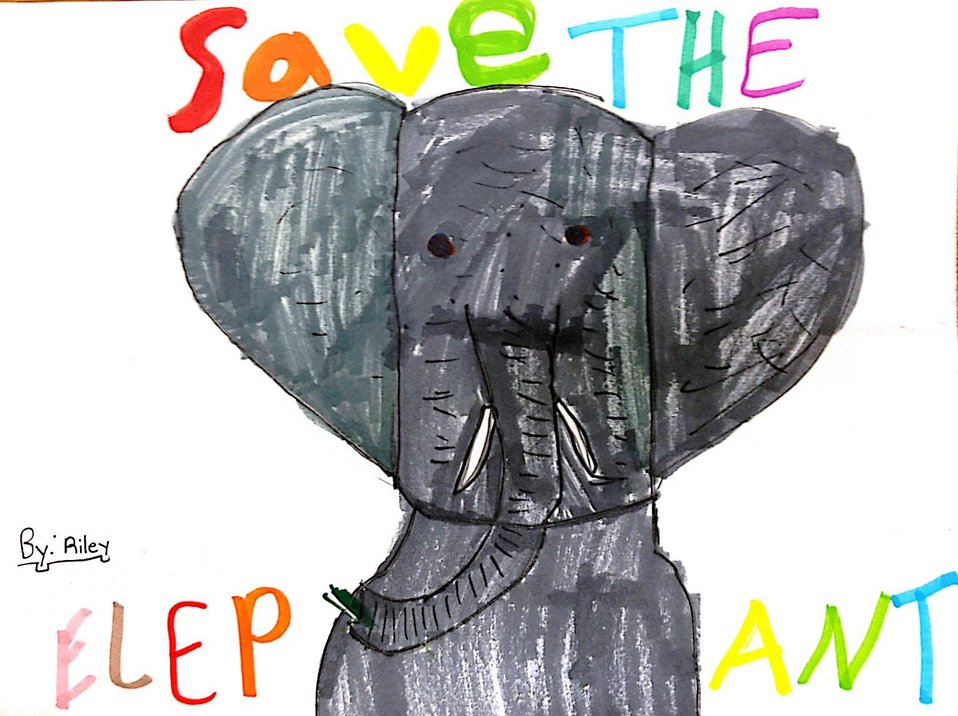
Drawing by Riley